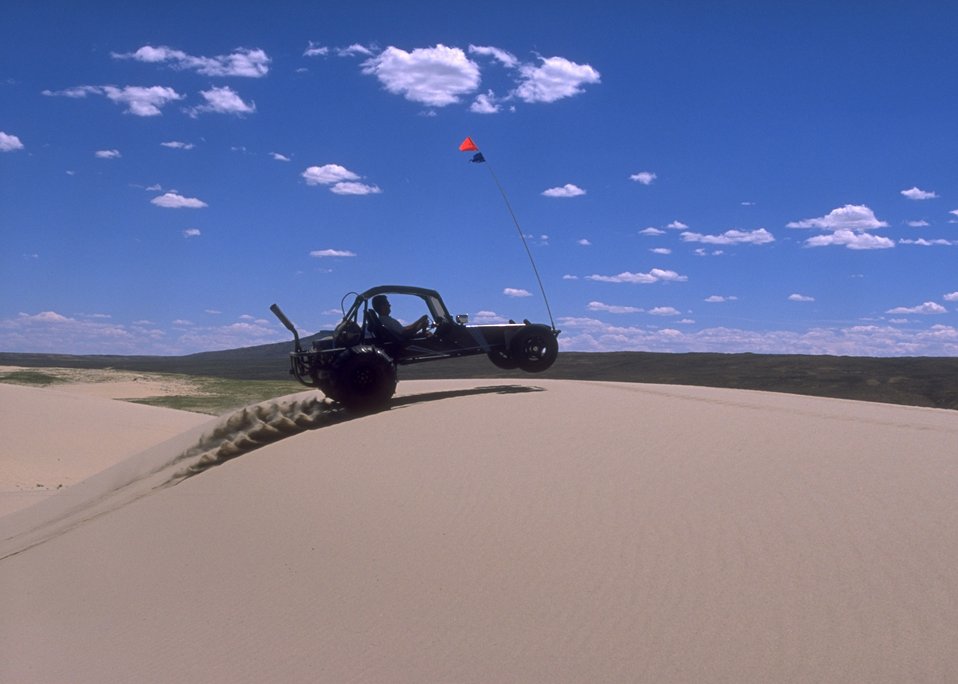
Sand Dunes OHV Area, Rock Springs Field Office.